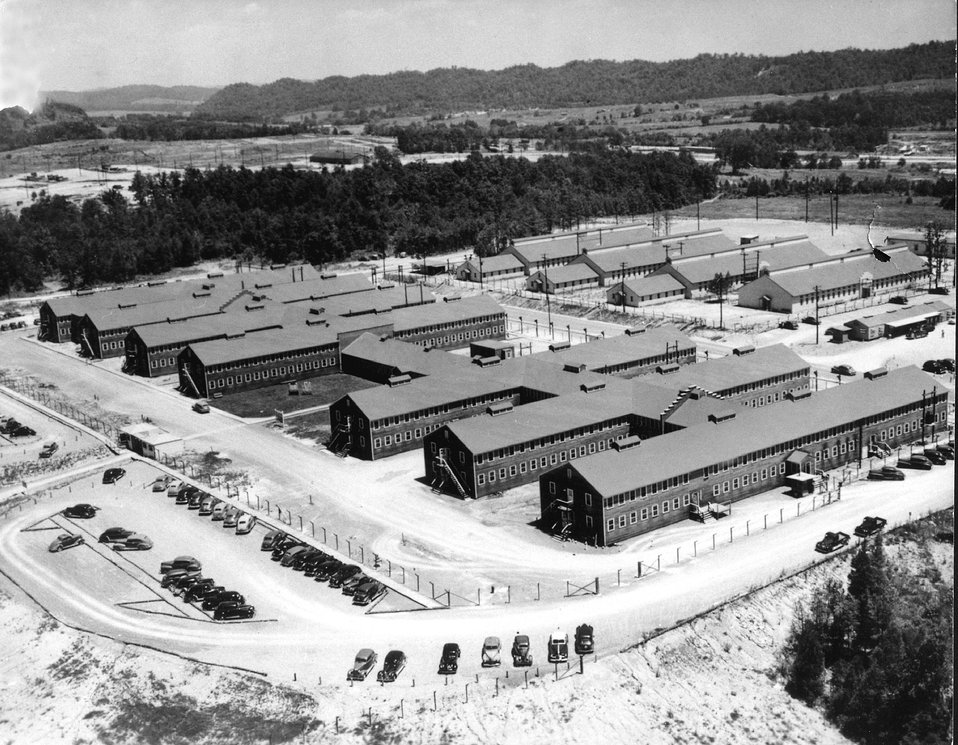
Clinton Lab - Oak Ridge Operations Office. c. undated